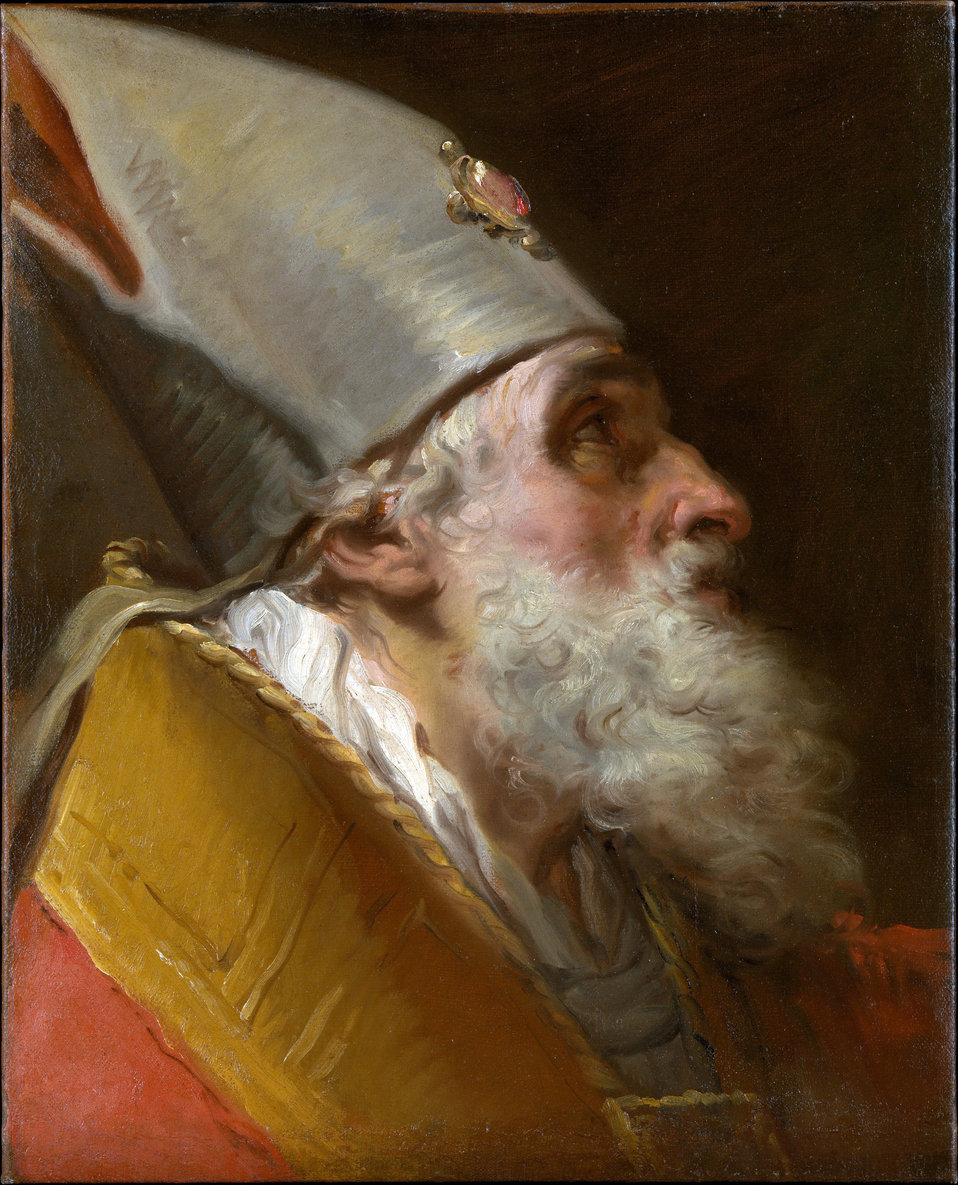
'Head of a Bishop', oil on canvas painting by Gaetano Gandolfi, Metropolitan Museum of Art